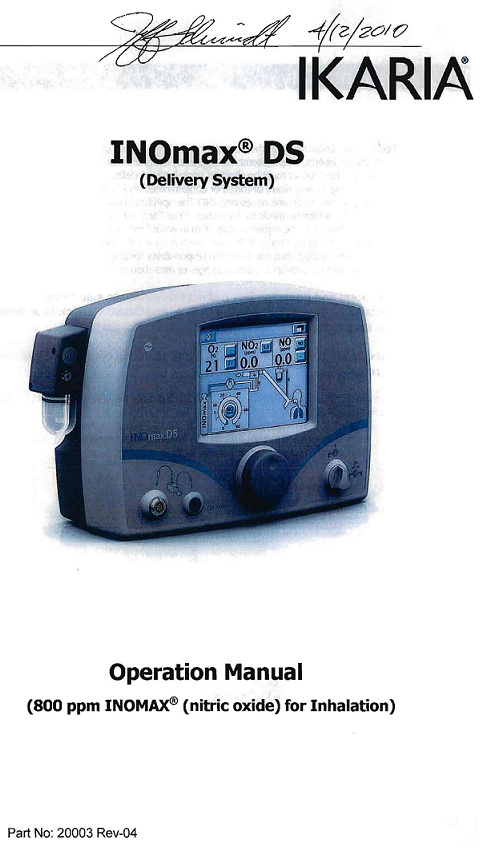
RECALLED - INOMAX DS Drug-Delivery System

December 22, 2011 - Product Recall - IKARIA® Issues Notice of Completed Remediation For
INOMAX® DS Drug-Delivery System.